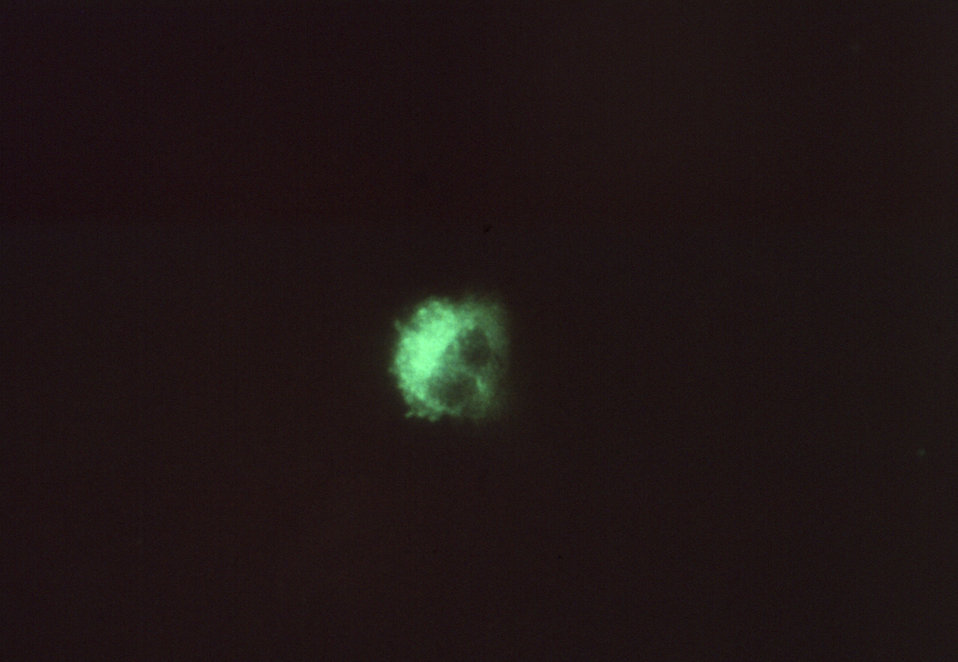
Magnified 400X, this direct FA stained mouse brain impression smear reveals the presence of the bacterium Chlamydophila psittaci, formerly Chlamydia psittaci, in a case of psittacosis.